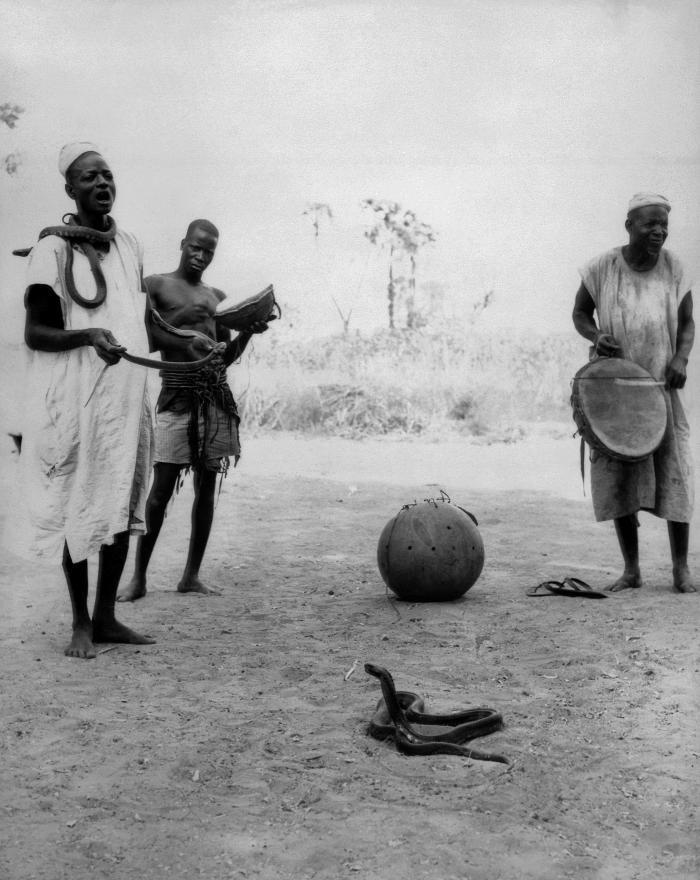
This 1969 image was captured in Niger, West Africa during the Smallpox Eradication and Measles Control Program efforts in that country. These three Nigerien men were standing around what appeared to be a cobra snake, while the man in the foreground at left, was actually handling a number of live snakes. The three were signing an unknown tune, and two of the men were playing handmade drums as musical accompaniment.